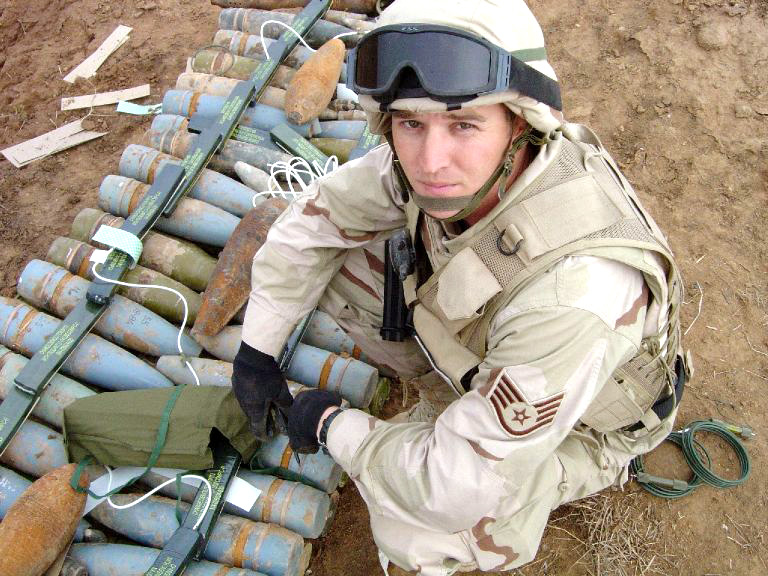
Cache in hand

OPERATION IRAQI FREEDOM -- Staff Sgt. Jonathan Bamburg kneels next to munitions discovered in a weapons cache outside of the city perimeter of Kirkuk. These types of weapons are used by insurgents to make improvised explosive devices. Sergeant Bamberg is an explosive ordnance disposal specialist with the 386th Expeditionary Civil Engineer Squadron.